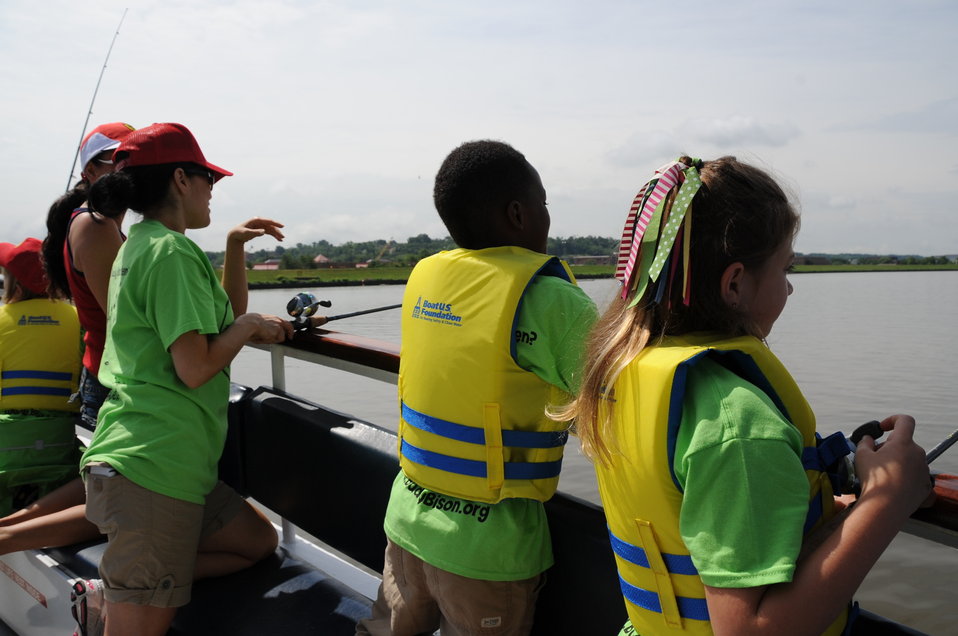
2013 National Fishing and Boating Week

Local students prepare to enjoy fishing at the annual kick-off of National Fishing and Boating Week on the Anacostia River in Washington D.C.